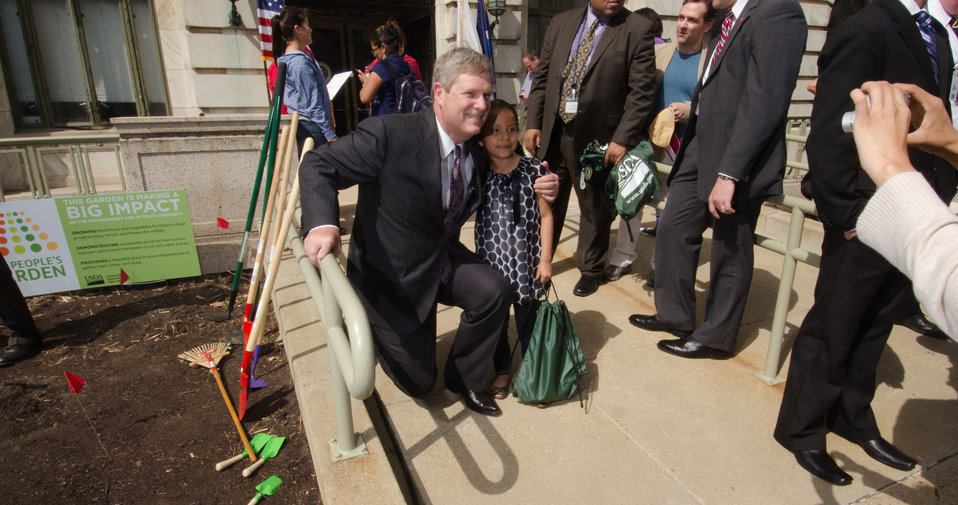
Agriculture Secretary Tom Vilsack met with Native American Youth at the U. S. Department of Agriculture in Washington, DC, on Wednesday, April 2, 2011 to encourage them to pursue a healthy lifestyle. After opening remarks and questions, Secretary Vilsack spent time with the 30 Students from Eastern and Western Tribes, Southeast Alaska, and Tuba City, Arizona, at he garden called The Roots of American Agriculture, and is part of the Headquarters’ People’s Garden.